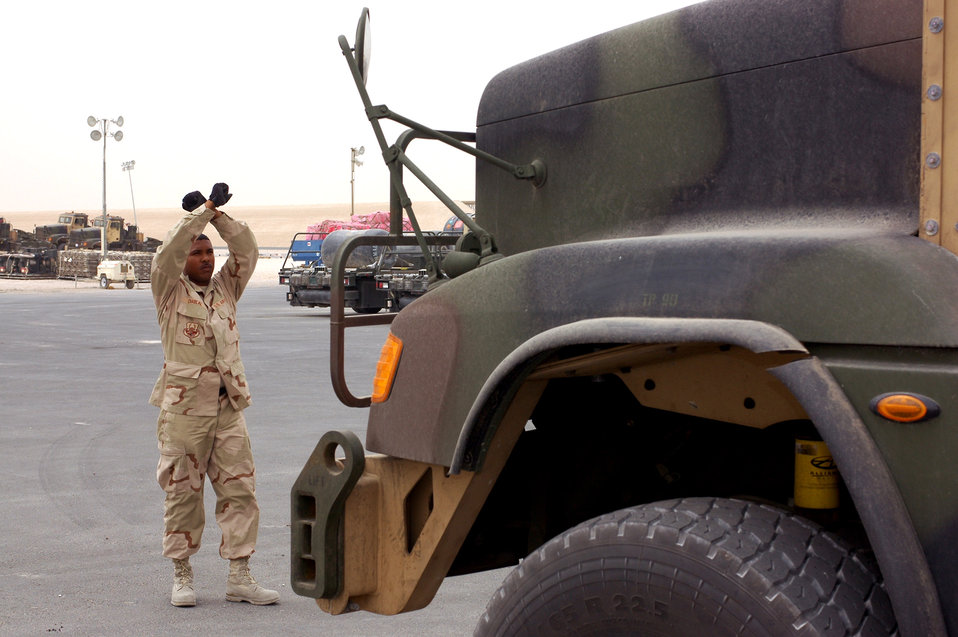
Air mobility keeps fast pace with war ops surges

Tech. Sgt. Garth Chablal guides one of 32 M916 trucks onto scales for weighing in preparation for shipment on C-17 Globemaster IIIs. Squadrons across the 379th Air Expeditionary Wing have picked up operations along with surge operations in Iraq and Afghanistan. Sergeant Chabal is the air freight supervisor of the 8th Expeditionary Air Mobility Squadron.